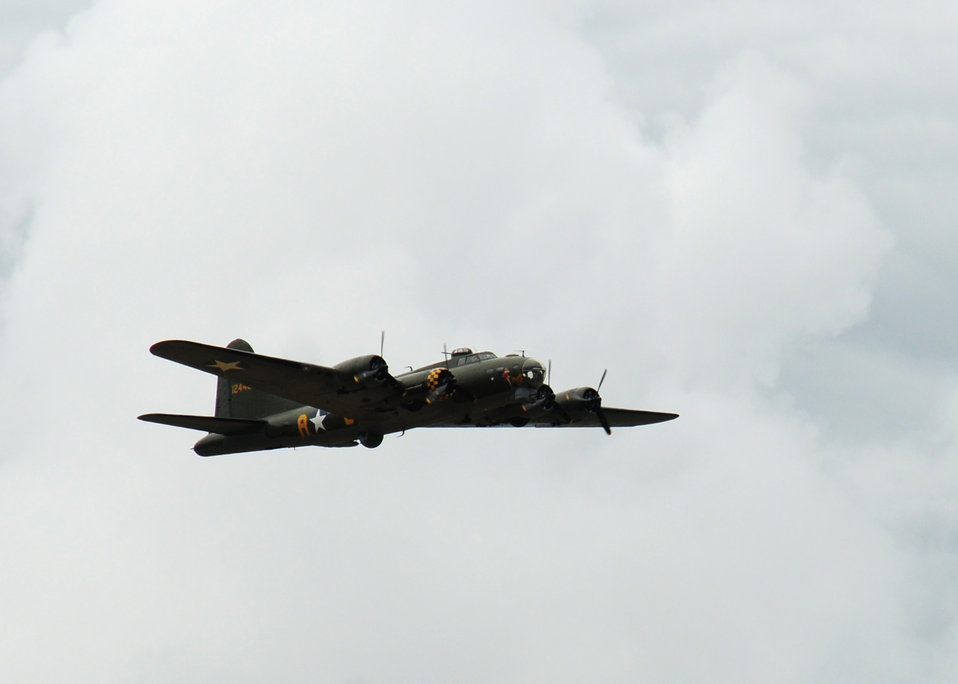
UK's 'Friendly Invasion' 70 years on

The last active B-17 Flying Fortress in Europe performs a fly-over above the former Knettishall Airfield, England, July 14, 2012. The fly-over was part of the 388th Bombardment Group memorial re-dedication at Coney Weston, England.